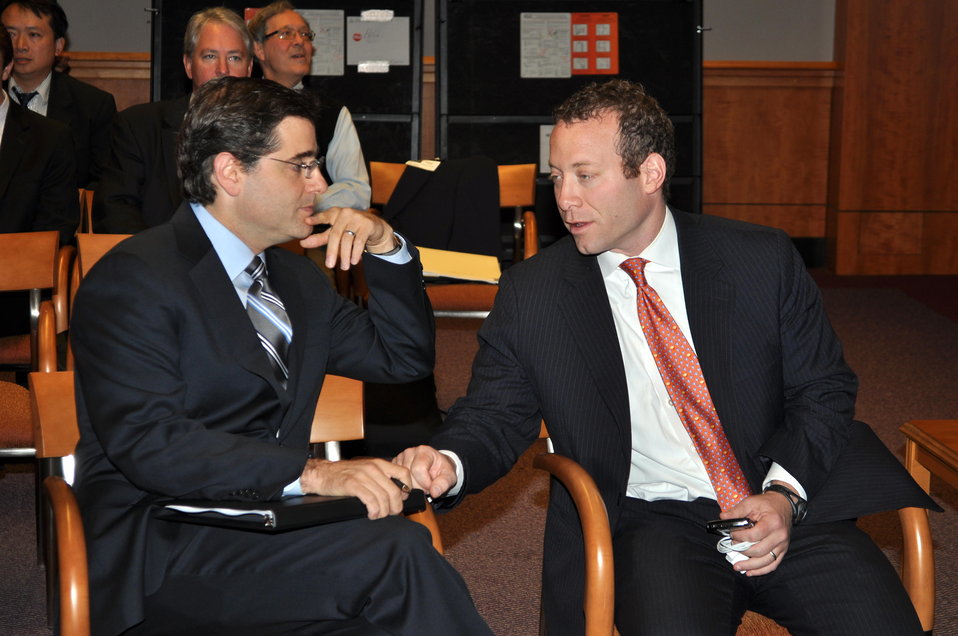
Spectrum Summit